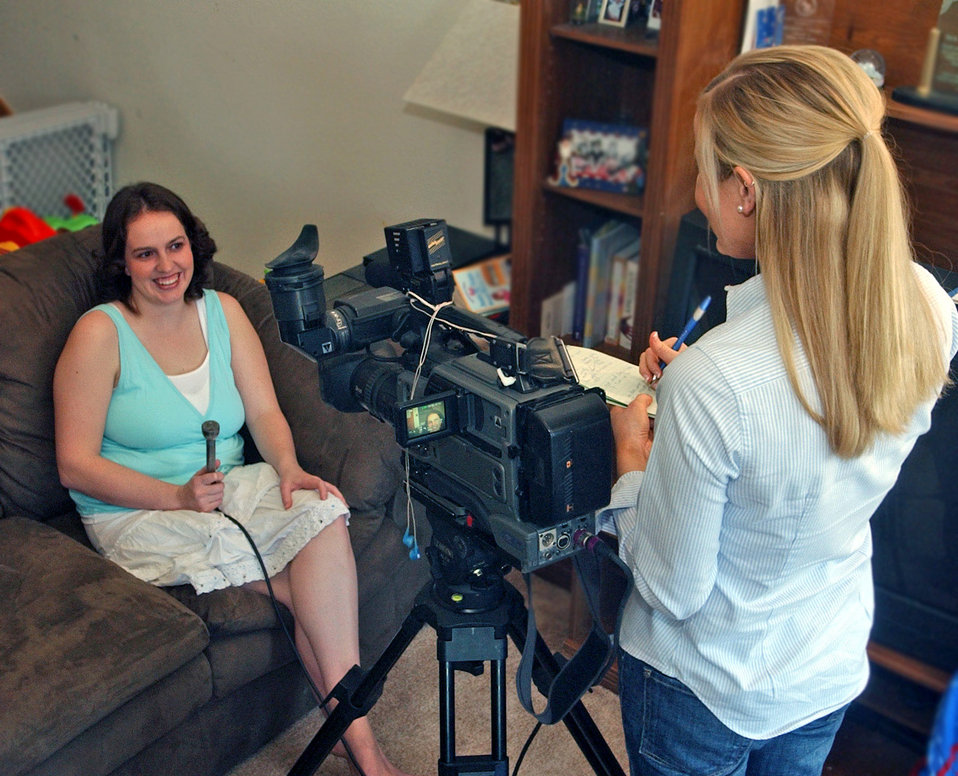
Eielson mom dances to TV contest?s final ten

Heather Kangas, one of 10 finalists on the ABC network's